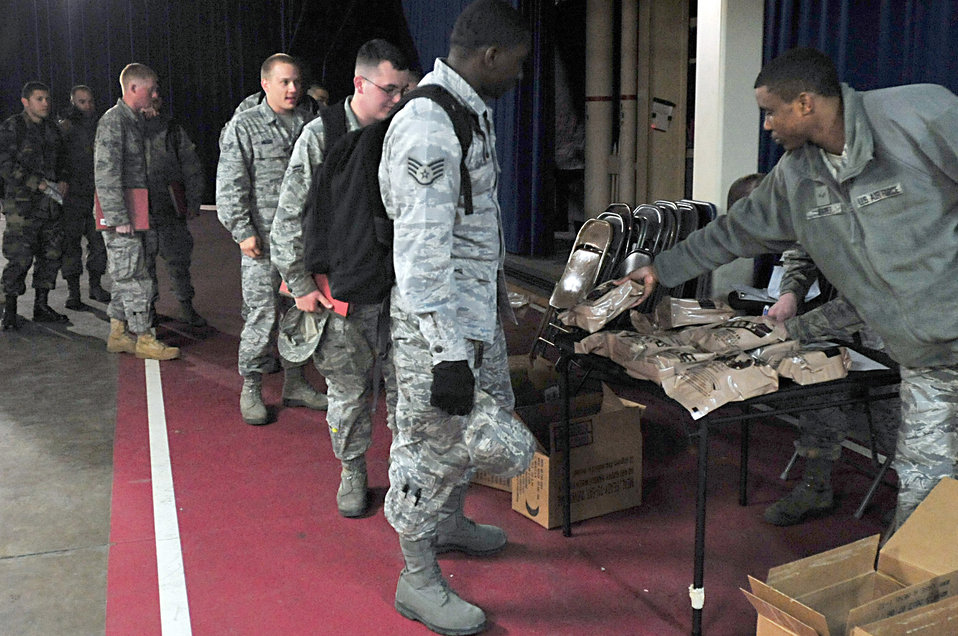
Operation Tomodachi

Members of the 18th Civil Engineer Squadron from Kadena Air Force Base, line up to receive a meal ready to eat after their arrival to Misawa Air Base, Japan, Mar. 13, 2011. Members will provide assistance with restoring electrical power and other base recovery operations in support of Japan's disaster relief efforts.